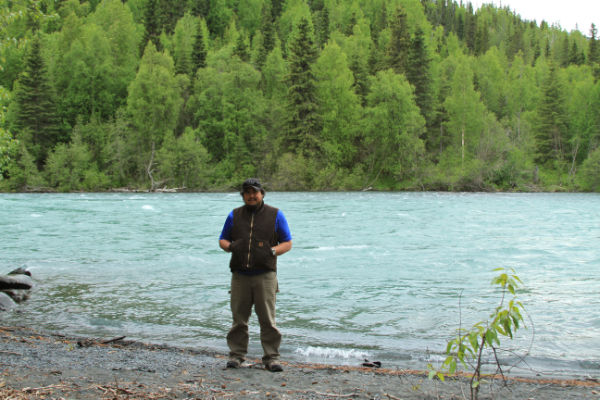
2012-Alaska Region-Work(06)

Alaska Career Discovery Internship Program is partnership with the Student Conservation Association to provide a 12 week internship to college freshman and sophomores to discover careers with the U.S. Fish and Wildlife Service.

Once in Alaska interns convened in Anchorage to acclimatize to the 'Far North' and receive more training including: bear safety, aviation safety, and more.